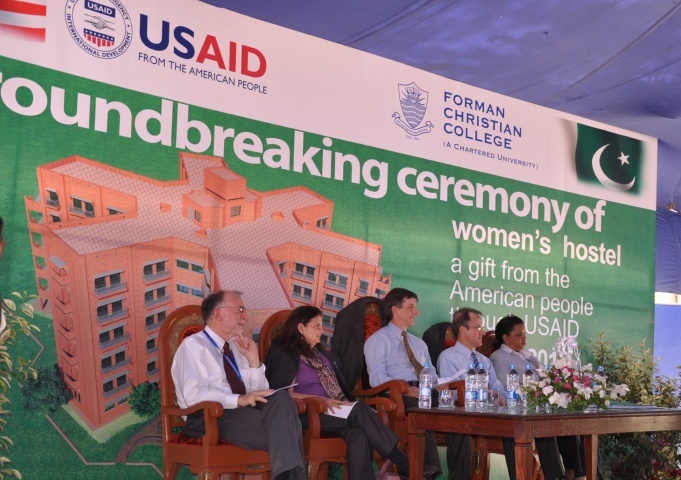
Rector-designate for FCC Dr. James Tebbe, Mr. Richard A. Albright (Coordinator of Development Assistance), Nina Fite (U.S. Consul General), Dr. Andrew Sisson,Ms. Gail Spence (Acting Director USAID Punjab) at the ceremony.